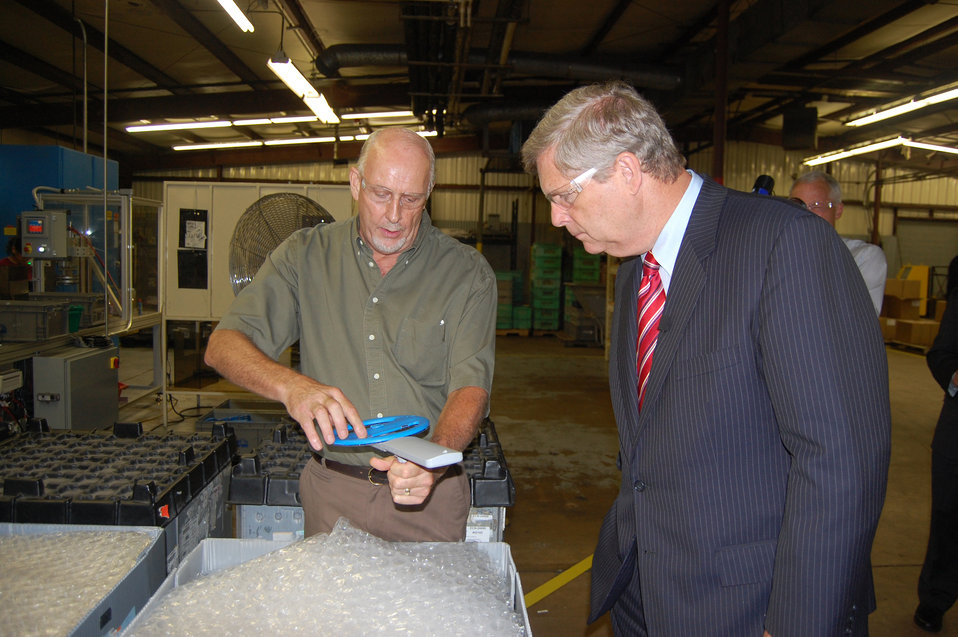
Tarheel Plastics Plant Manager Kip Tobey (left) shows Agriculture Secretary Tom Vilsack (right) a part manufactured for use in dishwashers at the Tarheel Plastics Plant in Lexington, NC., on Friday, Sept. 7, 2012. Tarheel Plastics produces components for automobiles and a wide variety of household appliances, supplying parts to companies such as Frigidaire and Electrolux. The company is certified as a minority business enterprise (51 percent minority owned) and recently received a U.S. Department of Agriculture (USDA) Rural Development (RD) business loan guarantee that allowed them to refinance.